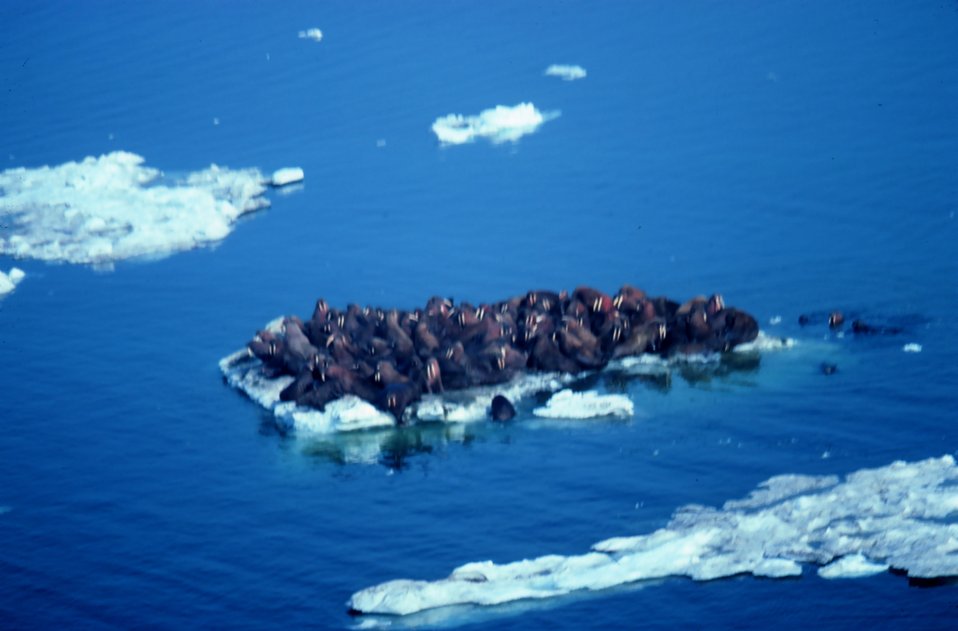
Walrus - Odobenus rosmarus divergens - hauled out on Bering Sea ice.